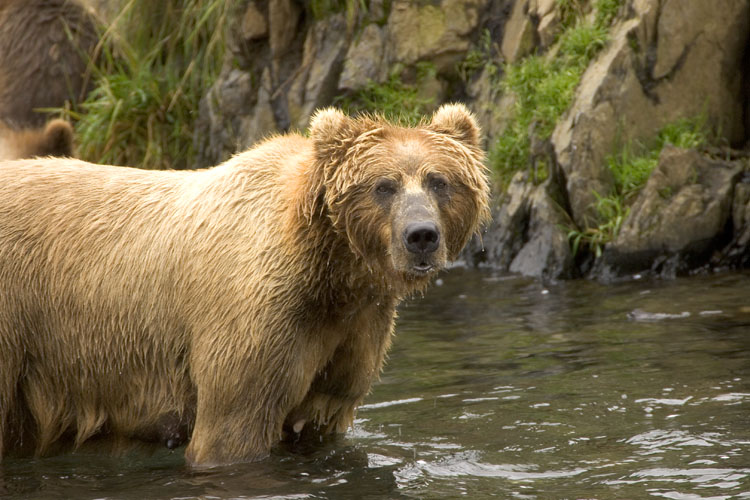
KOD Hildebrand (38)

Kodiak National Wildlife Refuge- Wildlife